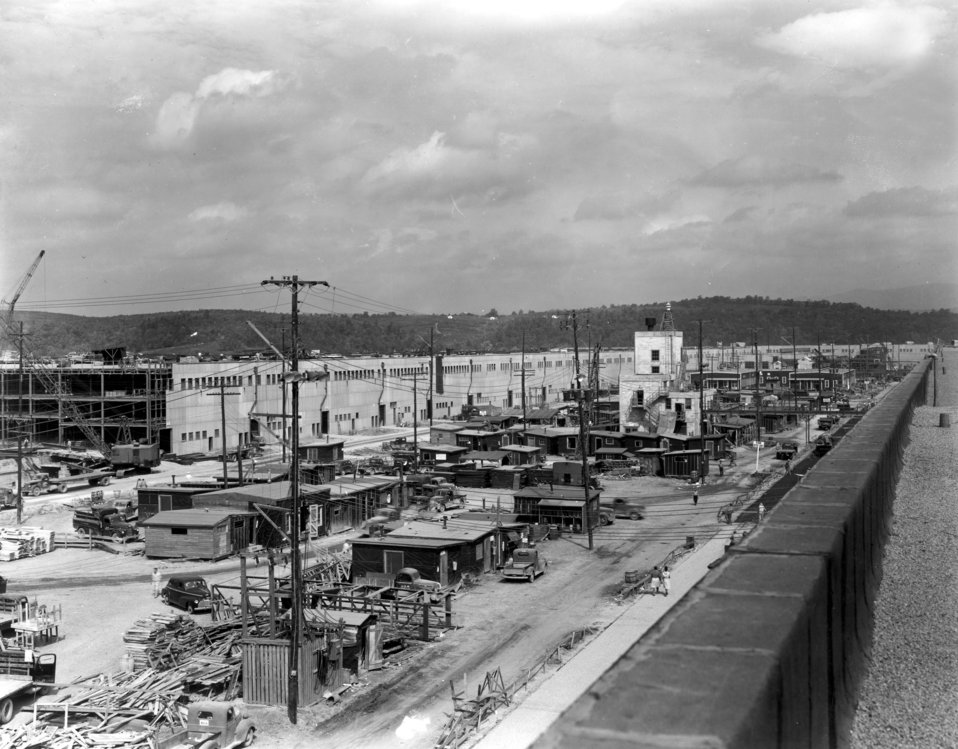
Construction in Center of “U” Building K-25 Oak Ridge

k-25-12 k-25-339 DOE photo by Ed Westcott Oak Ridge Tennessee 1945